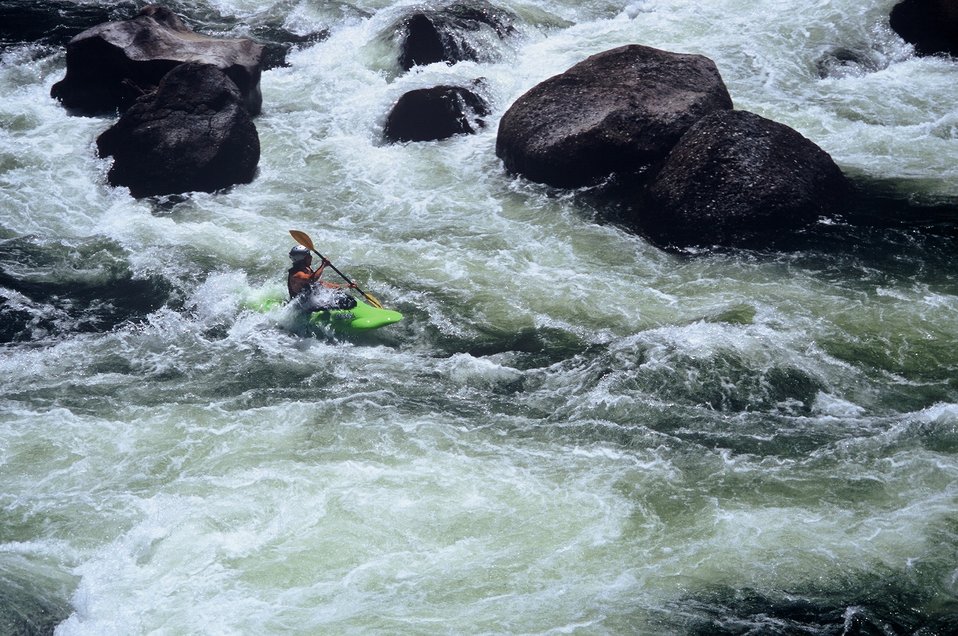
Blossom Rapids